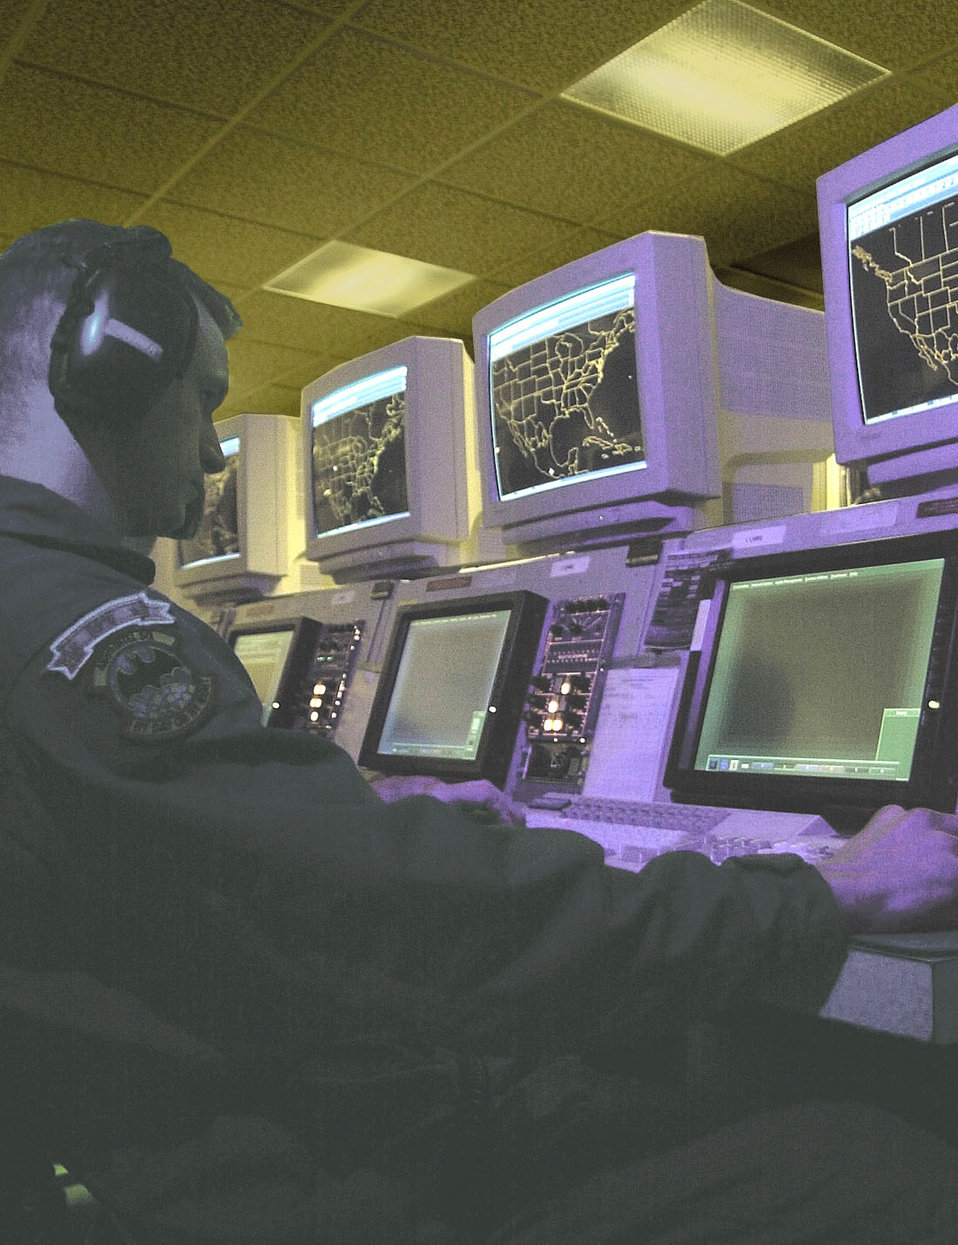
RC Intel

ROYAL AIR FORCE MILDENHALL, England -- Senior Airman James Cromer, from the 488th Intelligence Squadron here, processes raw intelligence from an RC-135.